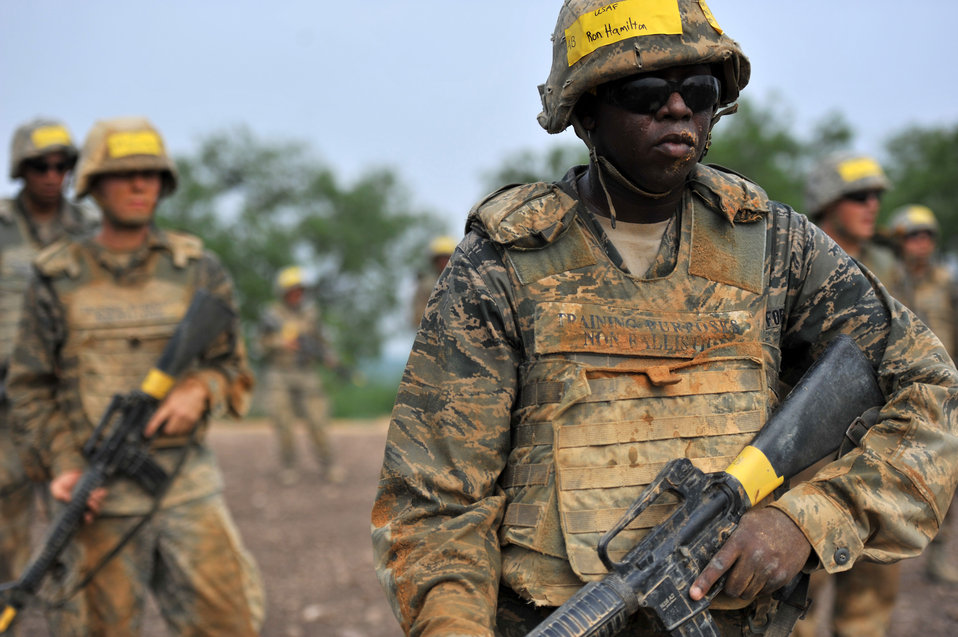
BEAST

Basic trainees go through their sixth week of Air Force basic military training at the Basic Expeditionary Airman Skills Training on May 25, 2011, at Lackland Air Force Base, Texas.